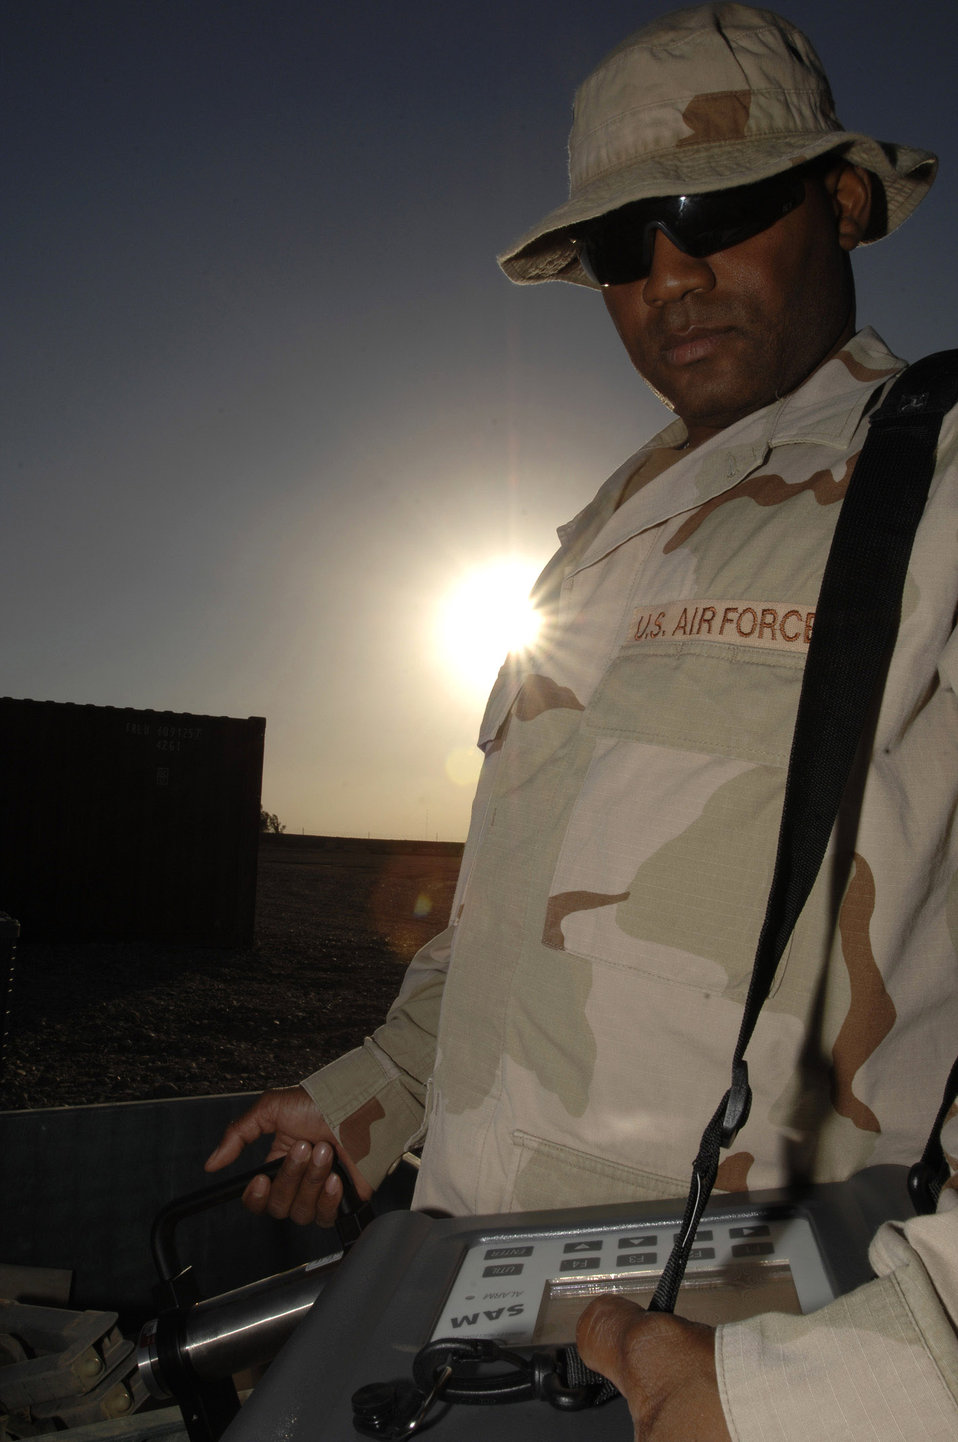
Bio environmental engineer

Master Sgt. Michael Keys conducts a preventative maintenance inspection on a surveillance measurement system which checks radio isotope activity levels Dec. 11 at Ali Base, Iraq. Sergeant Keys is a bioenvironmental engineer assigned to the 407th Expeditionary Medical Squadron and is responsible for occupational safety and health administration and the environmental protection agency. Sergeant Keys is deployed from McConnell Air Force Base, Kan.